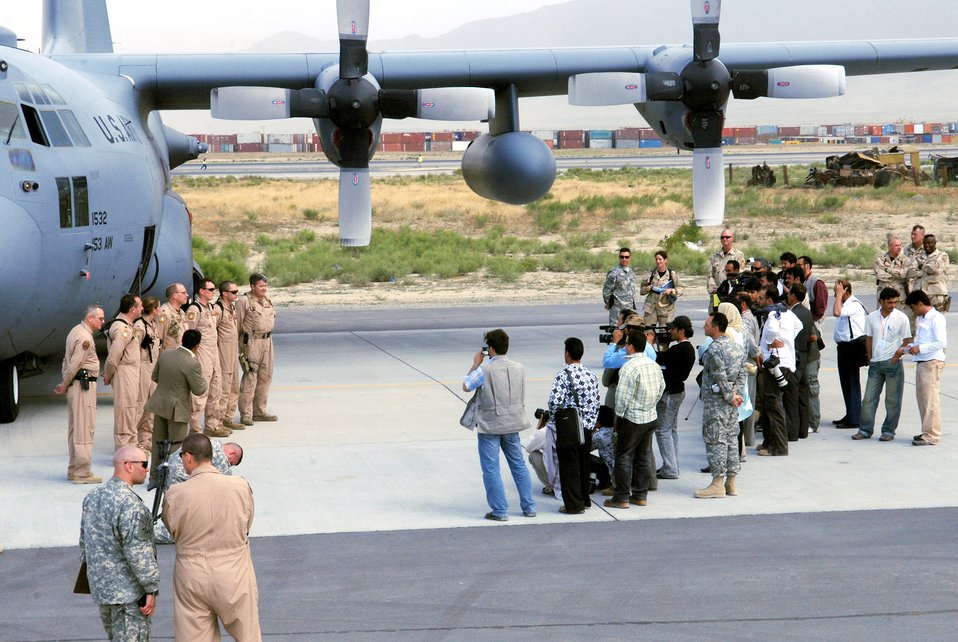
Afghan media get up-close view of Bagram Air Base

A C-130 Hercules aircrew from the 774th Expeditionary Airlift Squadron briefs a group of local Afghan media May 29 about their aircraft and its specific function and role in Operation Enduring Freedom at Bagram Air Base, Afghanistan. The media day was aimed at informing the local Afghan media on the operations at Bagram AB and how the U.S. military is working alongside coalition partners to support and defend freedom in Afghanistan.